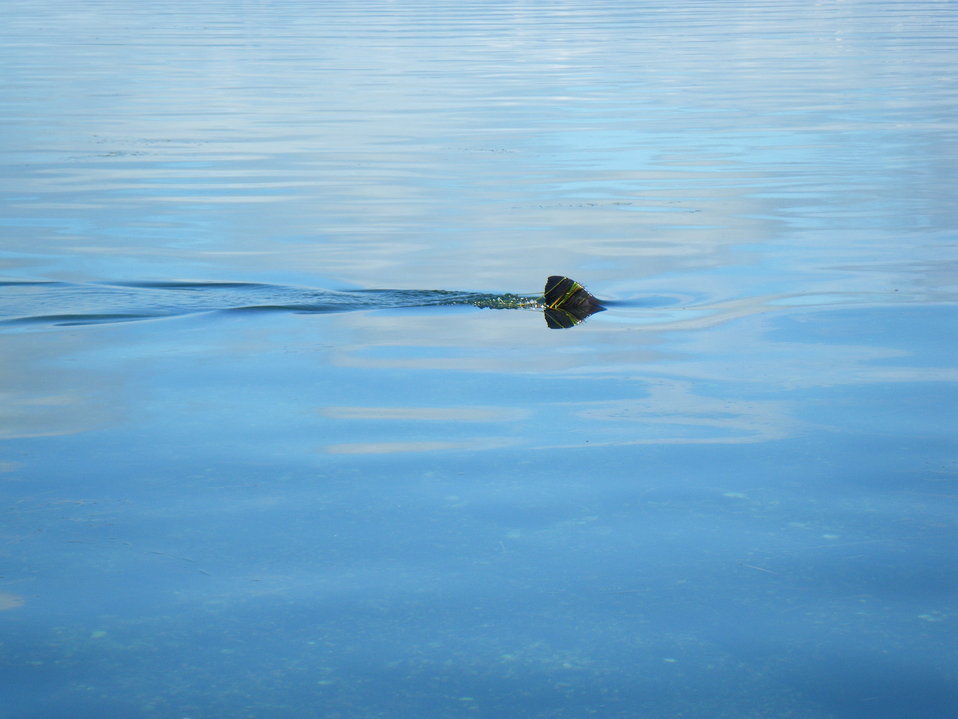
Salmon shark

Kinzarof Lagoon, Izembek National Wildlife Refuge